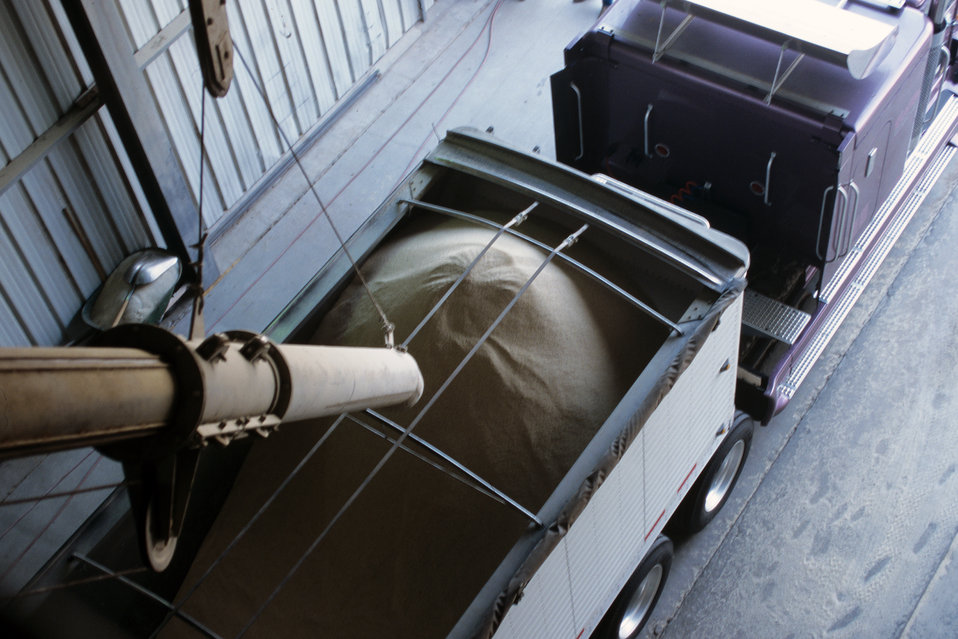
The rice hopper on a truck is loaded with rice for shipment to a processing facility at Riceland Foods Incorporated in Jonesboro, AR on Sept. 1, 1996. The U.S. Department of Agriculture (USDA) Grain Inspection, Packers and Stockyards Administration (GIPSA) offers inspection services for rice upon request on a fee basis for both domestic and export shipments. Rice inspection services are divided into two basic types: inspection for grade or factor analysis without grade. Inspection for grade involves analyzing the sample according to the quality factors listed in the Official U.S. Standards for Rice and certifying the applicable numeric grade designation, the quality factors responsible for the grade assignment, and any other quality factors the customer requests. Factor analysis involves the analysis of quality factors requested by the applicant for service without the certification of an applicable numeric grade designation. Factors requested by applicants might include free fatty acid, total oil and free fatty acid, stain as a count, broken in brown rice, false smut, and aflatoxin. Official inspections result in the issuance of an official certificate, which reports the grade of the rice. U.S. and international buyers rely on official USDA inspection certificates to provide accurate, official descriptions of the grade, class, and condition of the inspected rice. Official certificates are receivable by all offices and all courts of the United States as prima facie evidence of the truth of the statements stated thereon.